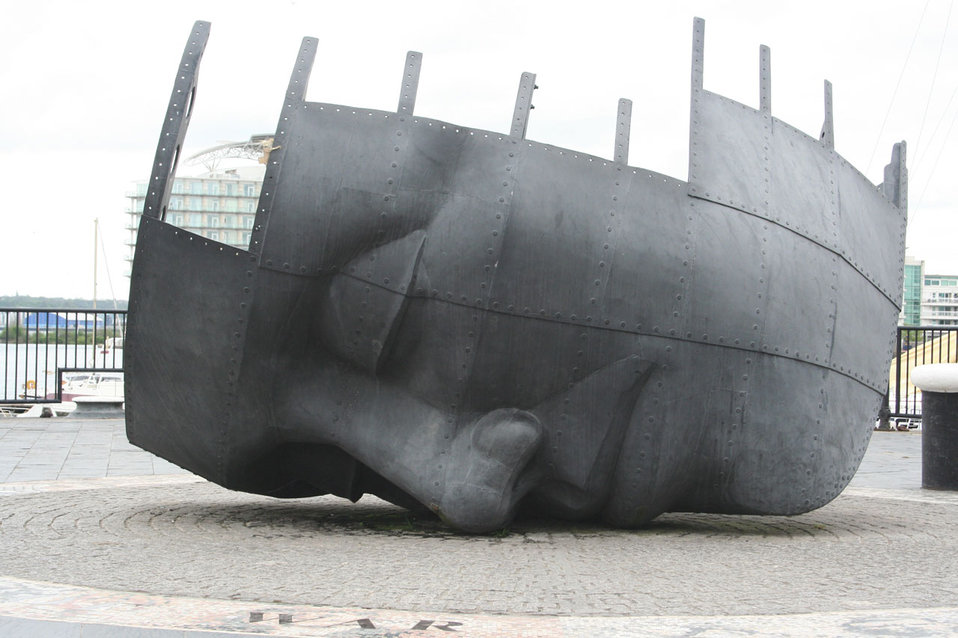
Mariners war memorial

War memorial ship wreck with face.